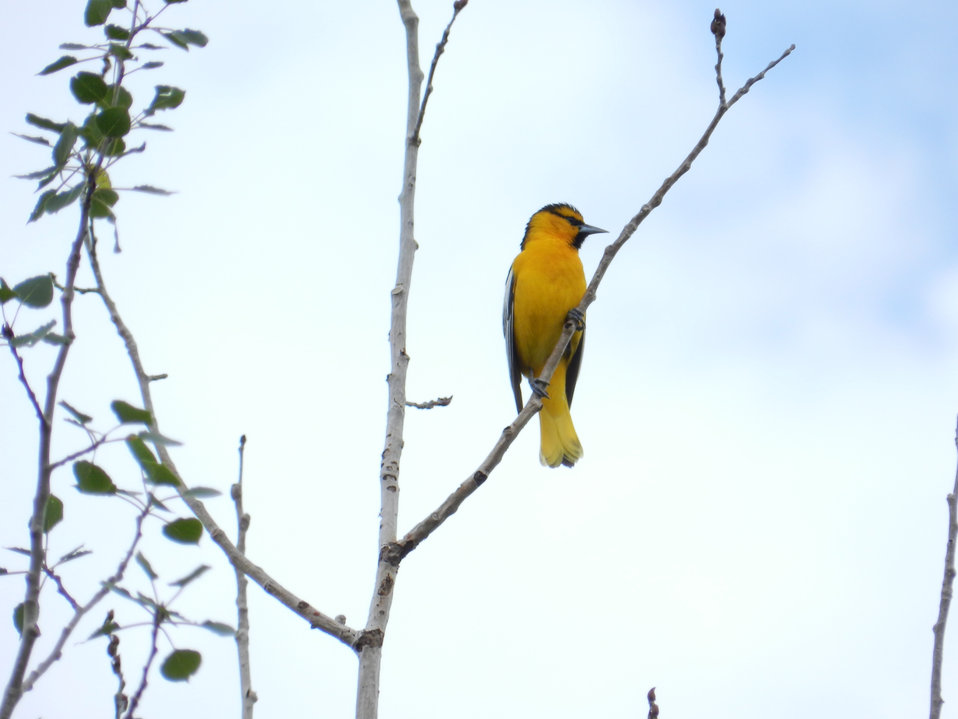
Northern oriole, Fort Collins, CO.

Credit: Pedro 'Pete' Ramirez, Jr. / USFWS